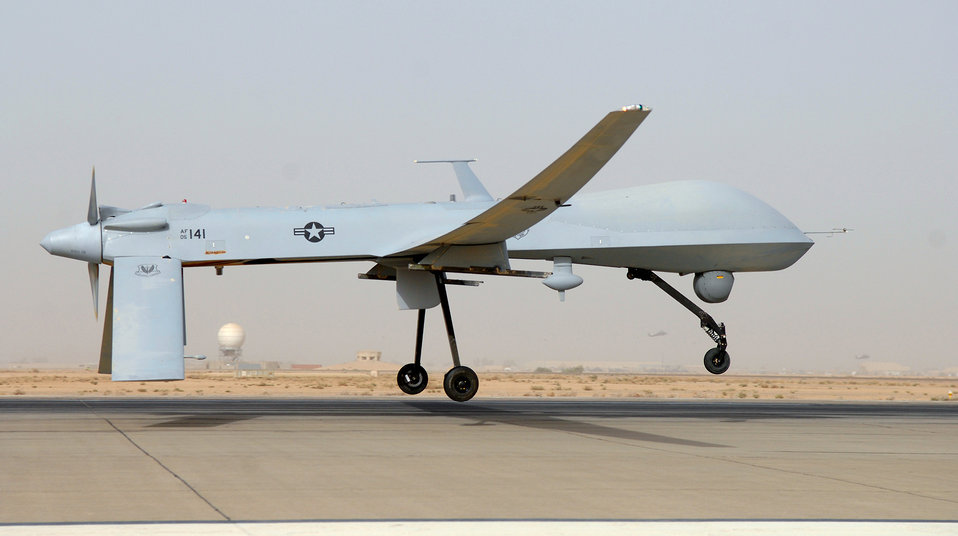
MQ-1 Predator

An MQ-1 Predator unmanned aircraft prepares for take off in support of operations in Southwest Asia.